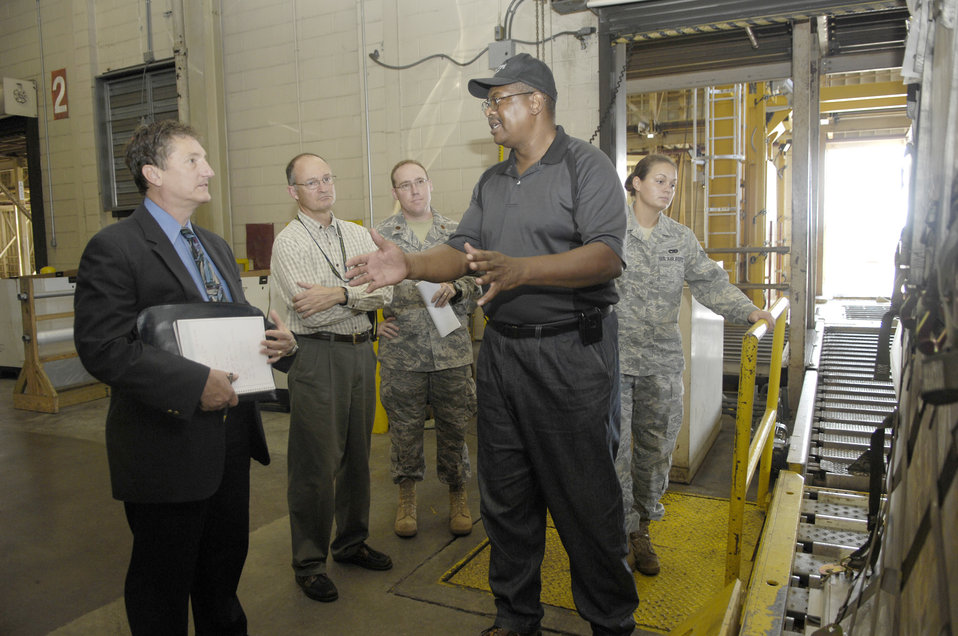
Scientists envision robotic aerial port at JBCHS

Senior Airman Jessica Stanley (left) and Bobby Robinson (right) give a tour of the 437th Aerial Port Squadron to scientists and engineers from the Air Force Research Laboratory July 16, 2010, at Joint Base Charleston, S.C. The researchers came from Tyndall Air Force Base, Fla., to tour the facility and see what changes could be made to improve efficiency and decrease workloads. Airman Stanley is a cargo journeyman and Mr. Robinson is an air freight supervisor, both with the 437th APS.